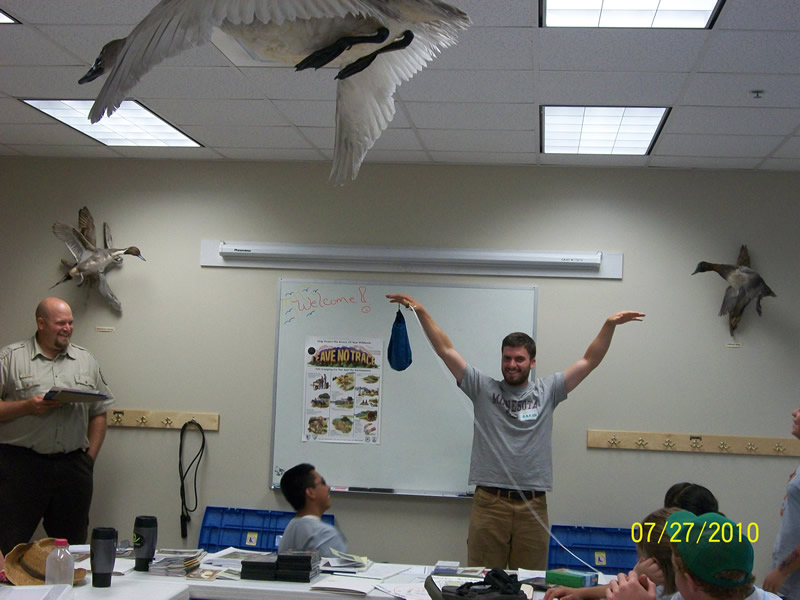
Leave No Trace Workshop

Youth Conservation Corps crew attended a Leave No Trace workshop presented by the Bear River Migratory Bird Refuge staff.